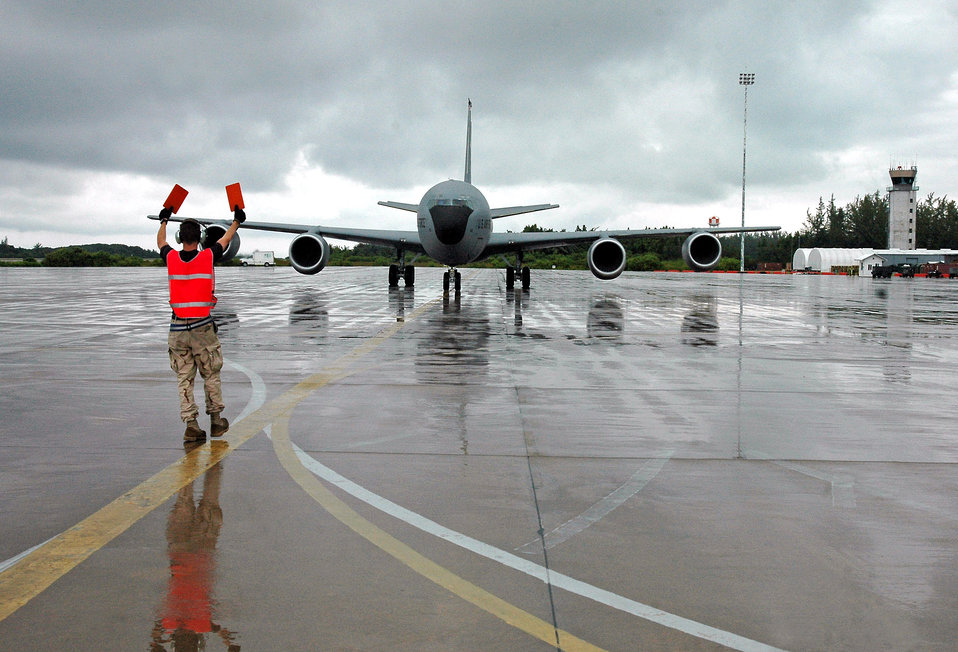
KC-135s build air bridges

Senior Airman Tyler Main marshals a KC-135 Stratotanker to a position where it can then be towed into a parking position. Airman Main is a crew chief with the 28th Expeditionary Air Refueling Squadron.